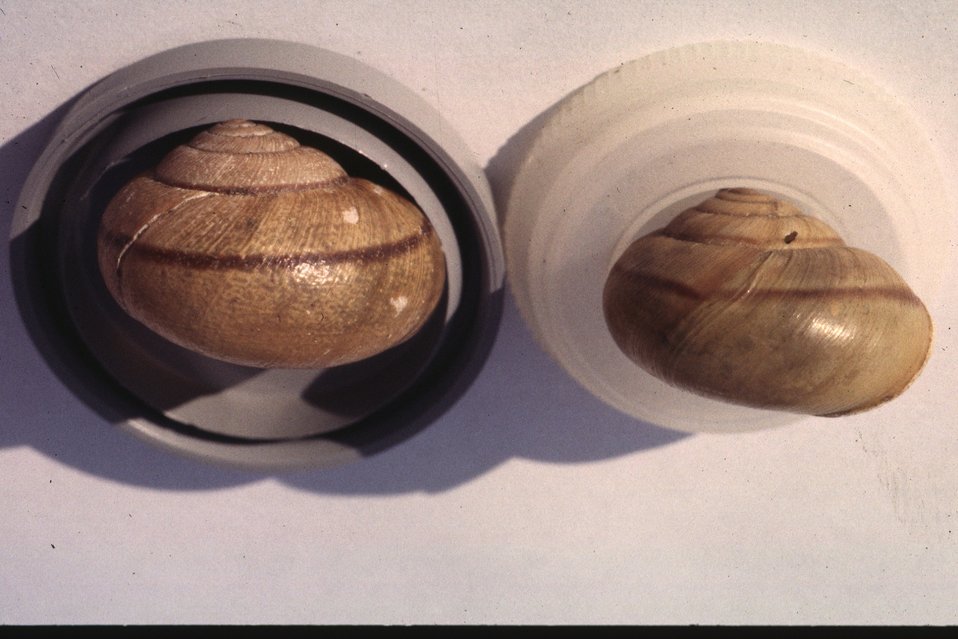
On the left is the Klamath shoulderband (Helminthoglypta talmadgei) and on the right is the Oregon shoulderband (Helminthoglypta hertleini).